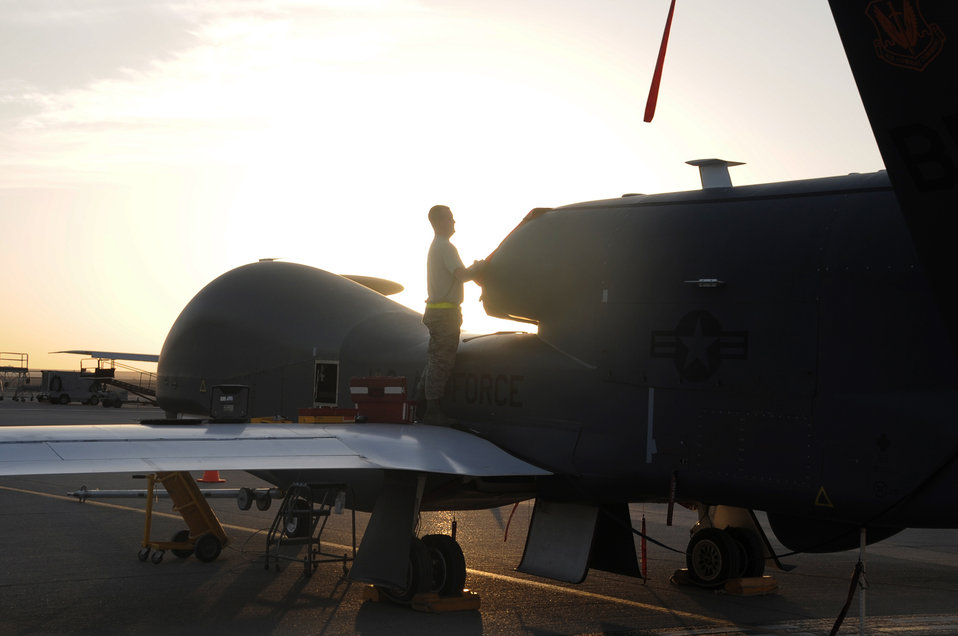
Deployed Global Hawks surpass 30,000 combat flying hours, 1,500 sorties

Staff Sgt. Michael Goenner goes through pre-flight servicing while preparing an RQ-4 Global Hawk for a combat mission Feb. 12, 2010, in Southwest Asia. The RQ-4s, assigned to the 380th Air Expeditionary Wing and deployed from Beale Air Force Base, Calif., achieved 1,500 combat sorties and 30,000 combat flying hours on Feb. 10 and 11 respectively. Sergeant Goenner is an RQ-4 Global Hawk crew chief with the 380th Expeditionary Aircraft Maintenance Squadron Hawk aircraft maintenance unit.